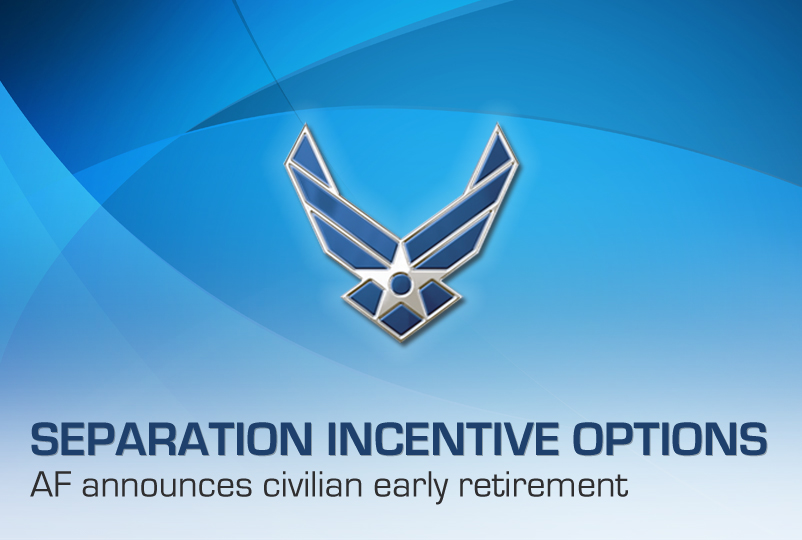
Separation Incentive Options